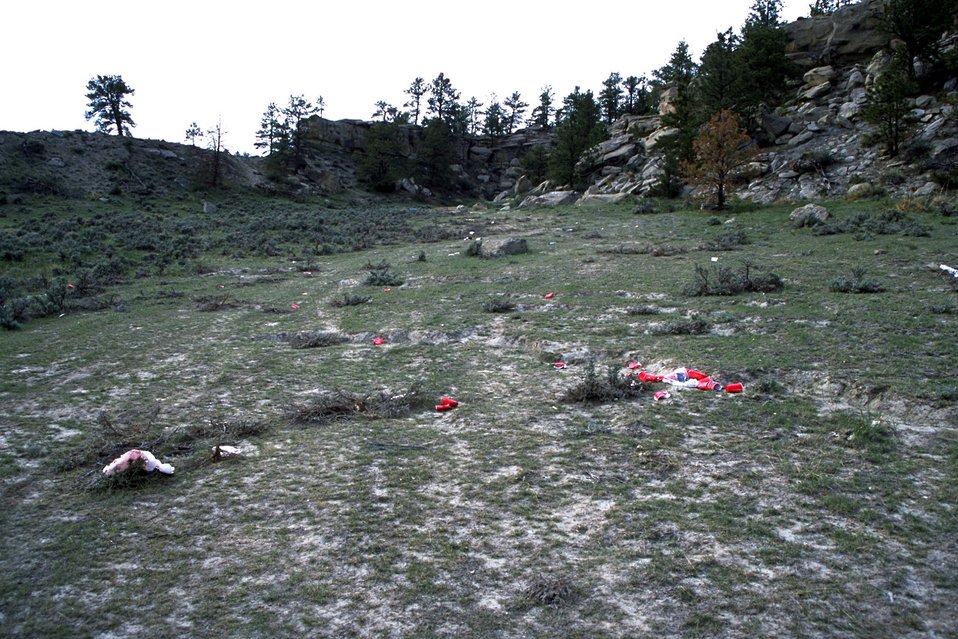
Trash found from illegal ""kegger"" parties in the Acton Recreation Area